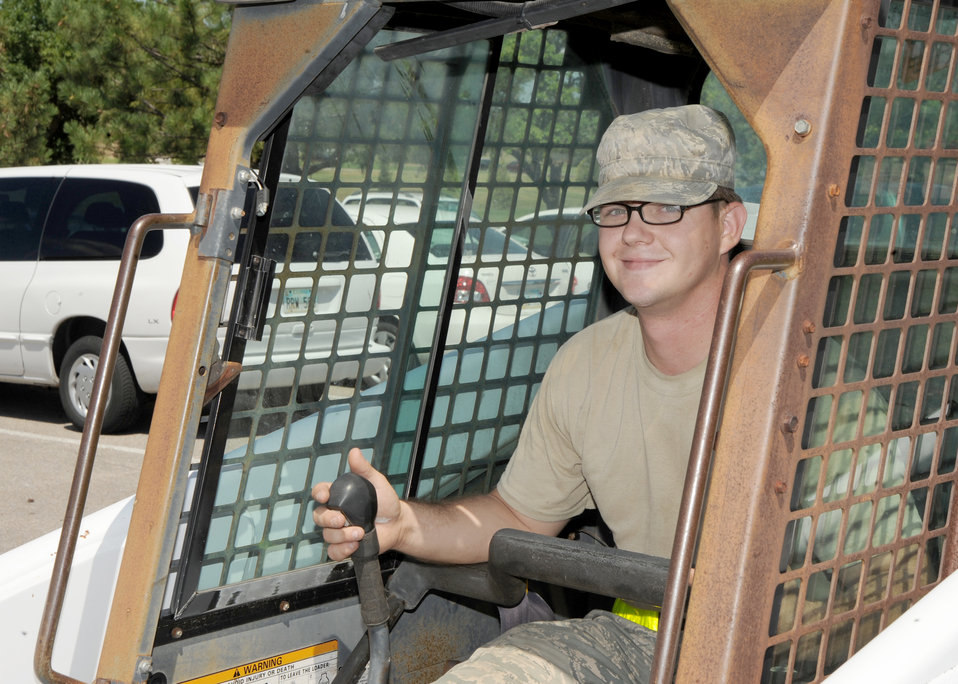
McConnell Airman helps save 8-year-old's life

Senior Airman Robert Fischer parks a vehicle prior to pouring a new sidewalk Aug. 18, 2010, at McConnell Air Force Base, Kan. Airman Fischer rescued 8-year-old Alexi Gardner from drowning during a church group canoeing trip at the Buffalo River, Ark. Airman Fischer is a 22nd Civil Engineer Squadron pavements and equipment operator.